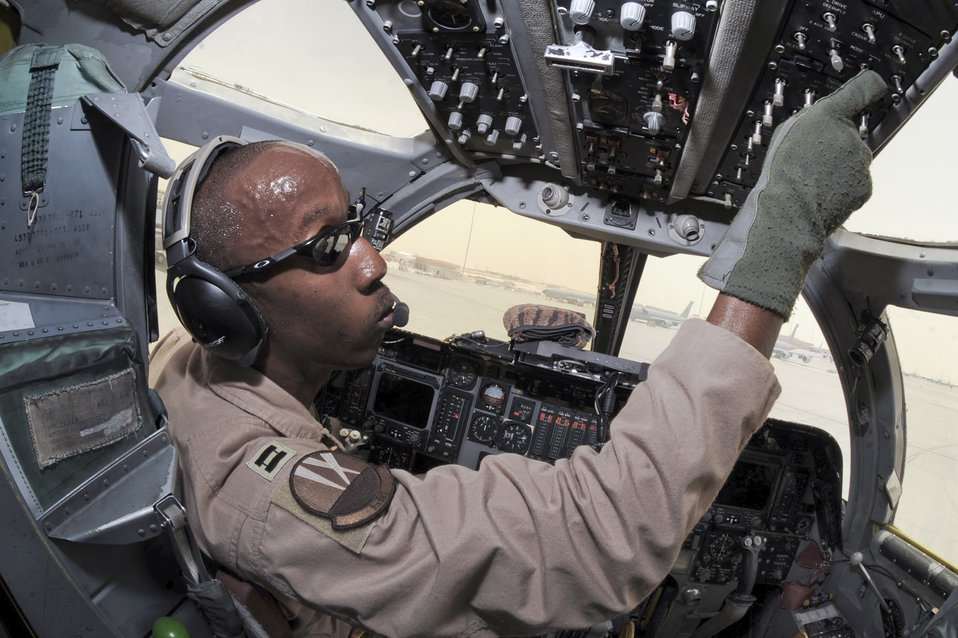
B-1B makes impact throughout Southwest Asia

Capt. Andre Walton runs a B-1B Lancer through its preflight checklist May 5 at an air base in Southwest Asia. Captain Walton is a 9th Expeditionary Bomb Squadron pilot. He is a native of Raleigh, N.C., and deployed from Dyess Air Force Base, Texas.